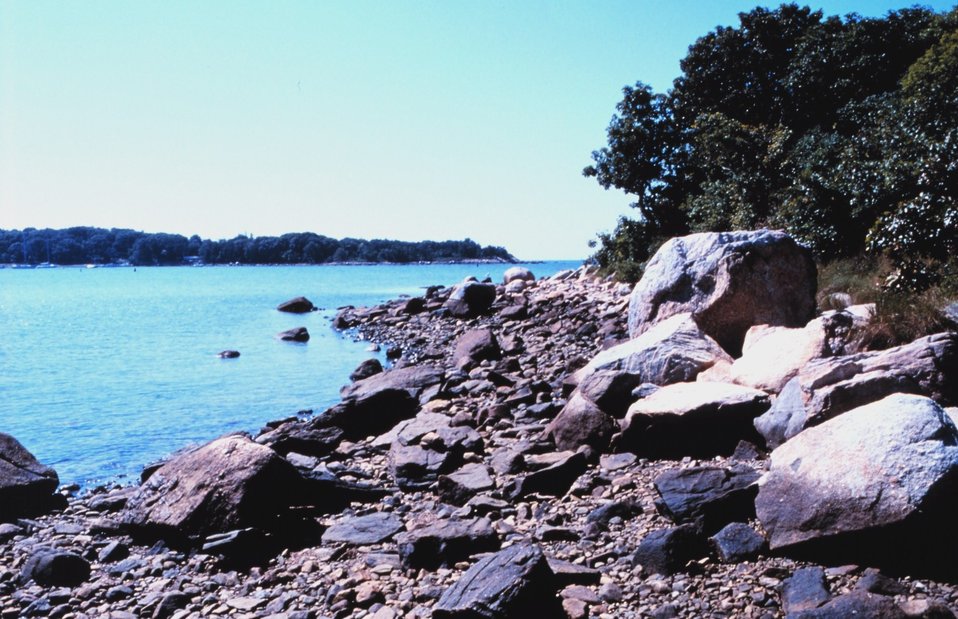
Quissett Harbor